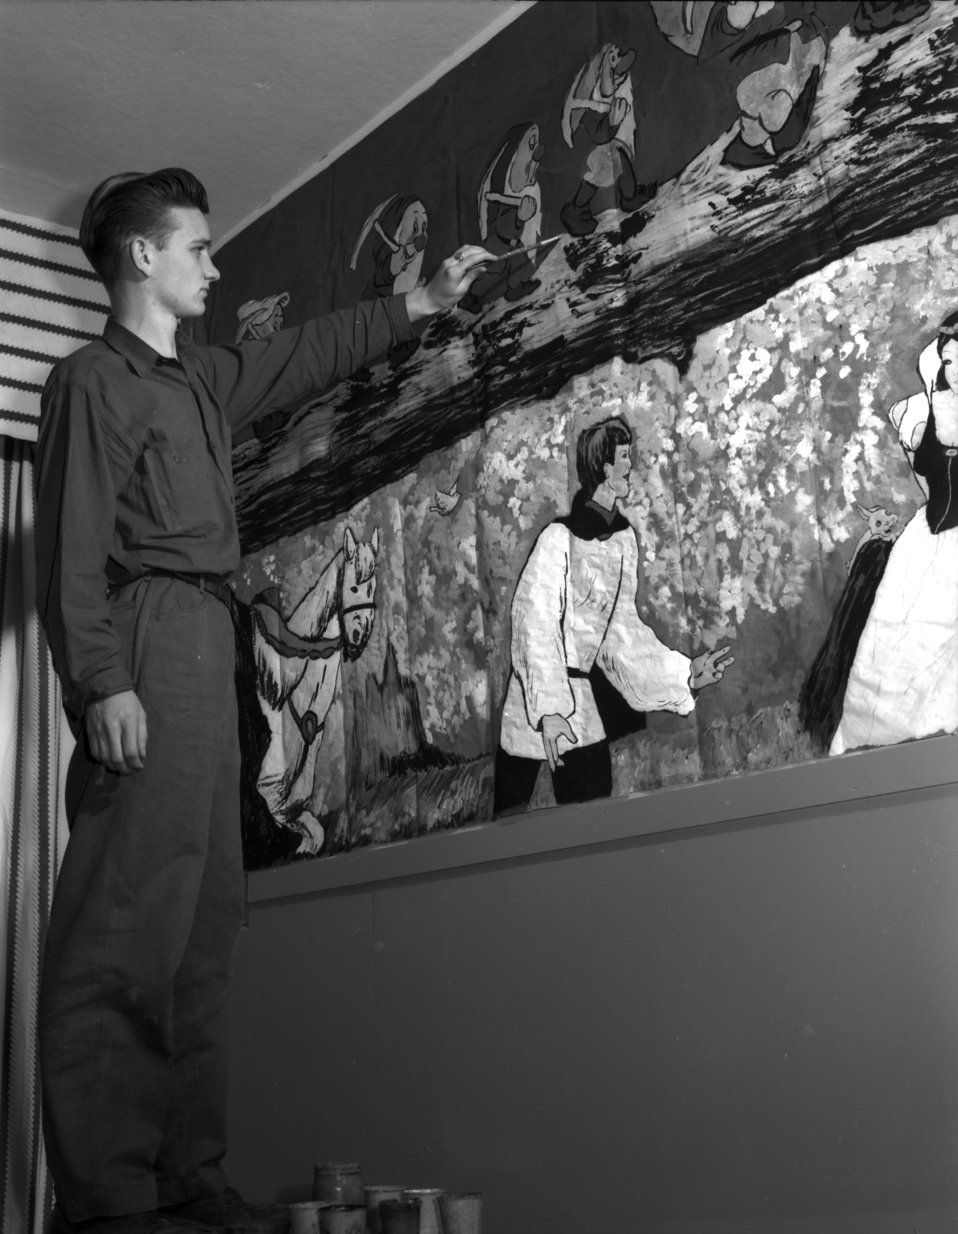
Artist at Jefferson Jr. High Mural Club Fiesta

04239 DOE photo by Ed Westcott
Oak Ridge Tennessee 1-9-1948